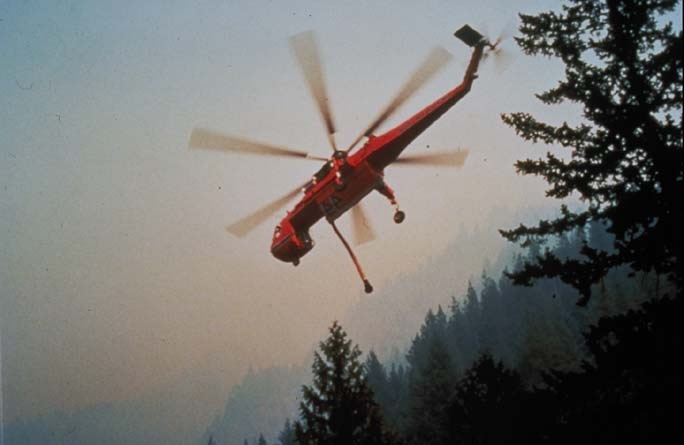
Helicopter with bucket